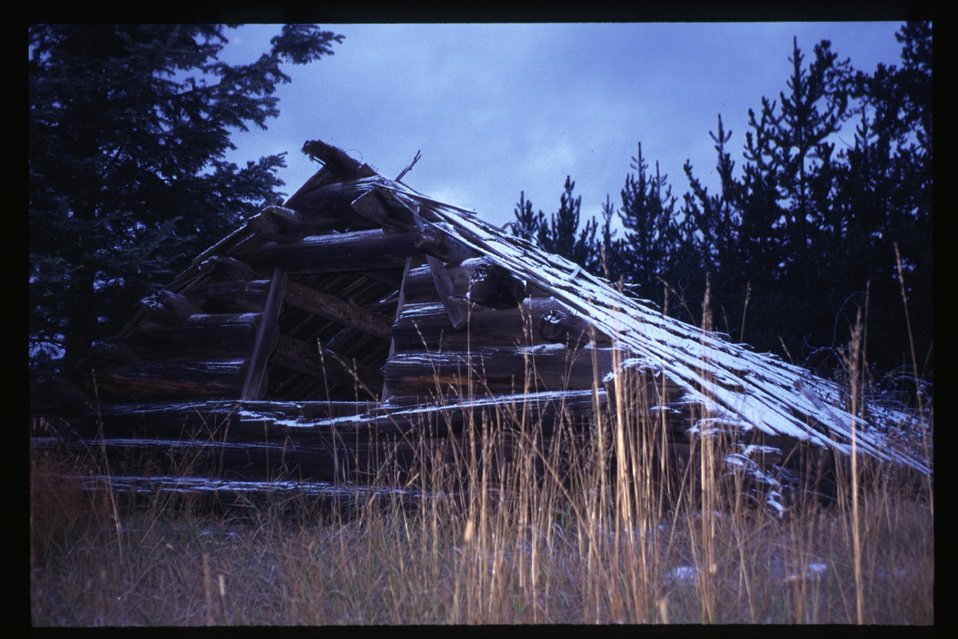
Historic Structure Craig Mountain North Idaho Scenics, Couer d'Alene UCSC Upper Columbia Salmon Clearwater District